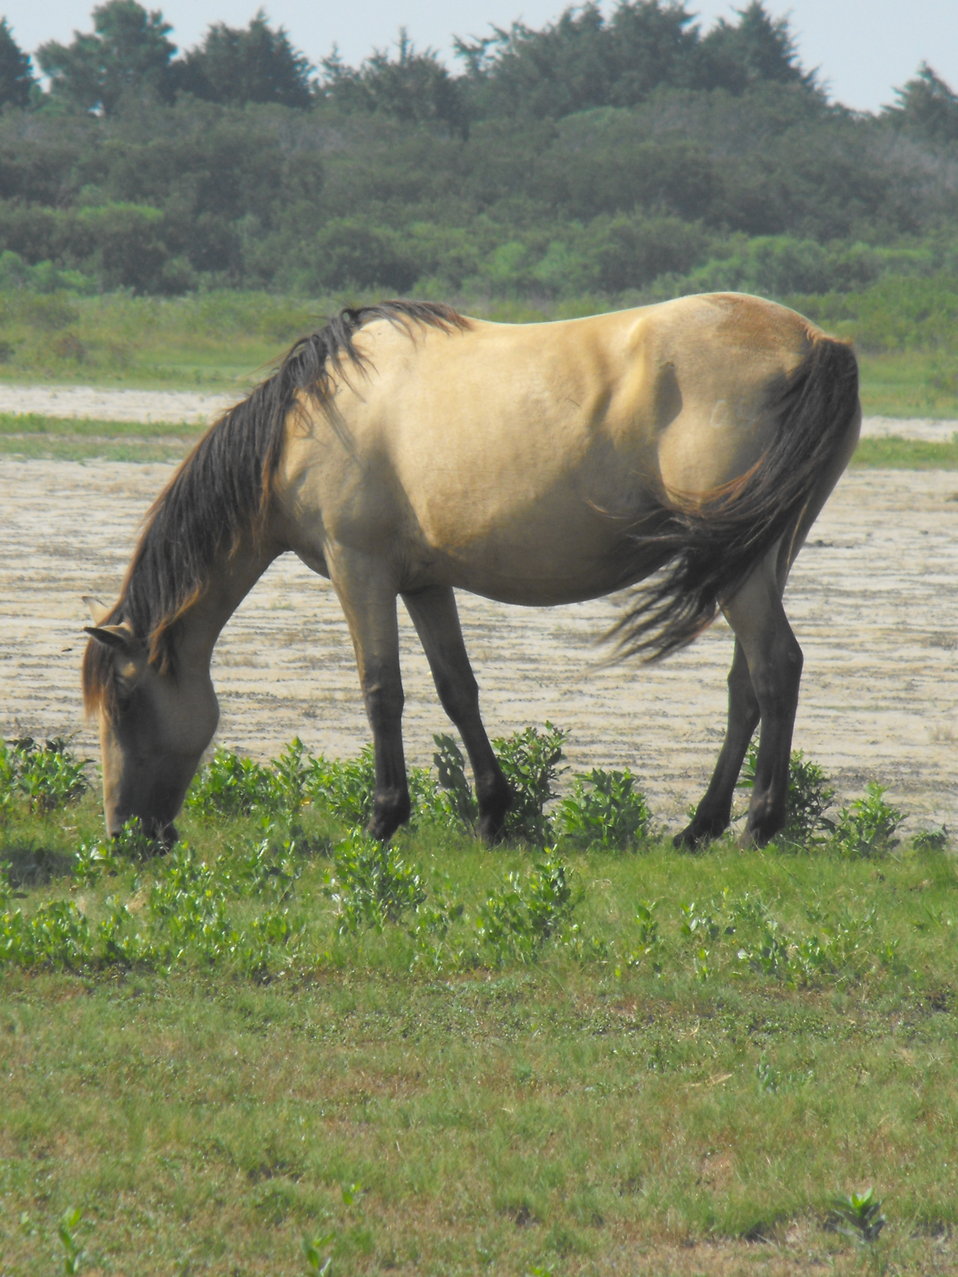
Chincoteague pony

A Chincoteague pony grazing off the Service Road at Chincoteague National Wildlife Refuge.